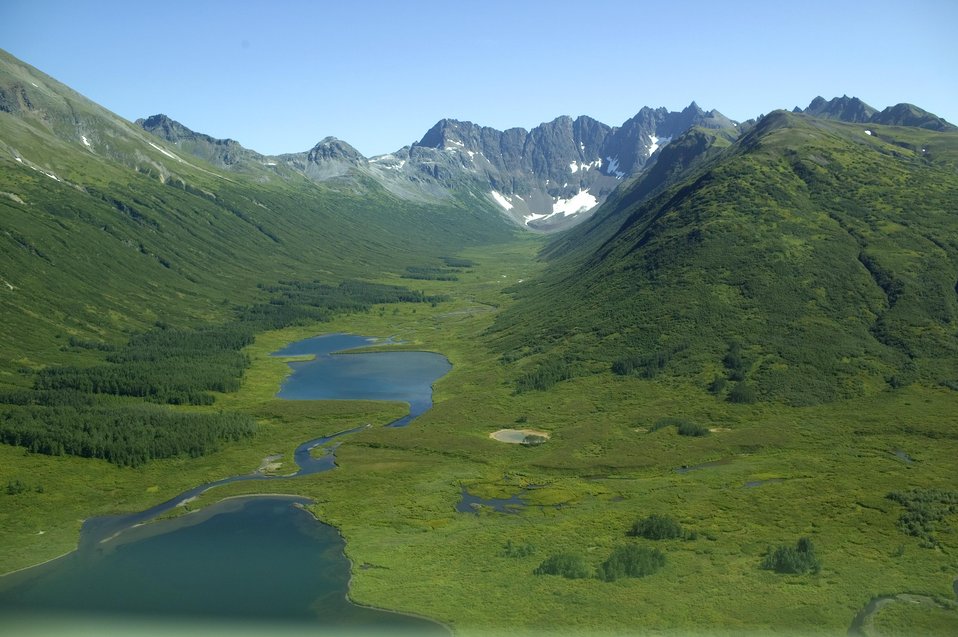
Togiak NWR
Mountains and Lakes